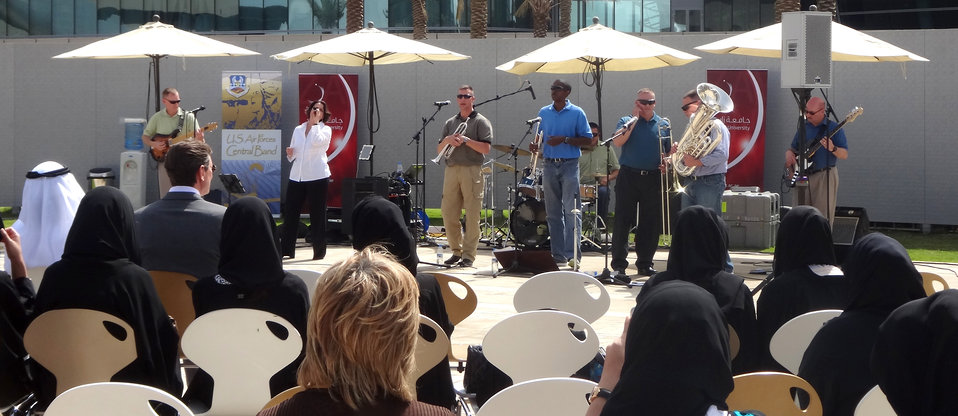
AFCENT band plays Abu Dhabi university

The U.S. Air Forces Central Band, Afterburner, performs the first-ever rock concert at Zayed University in Abu Dhabi, United Arab Emirates, Feb. 16, 2012. The performance was coordinated as part of the continuing diplomacy mission of the U.S. Embassy. The American ambassador to the United Arab Emirates, Michael Corbin, attended the event, as did the Emirati Minister of Education, His Excellency Humaid Mohammad Al Qattami.